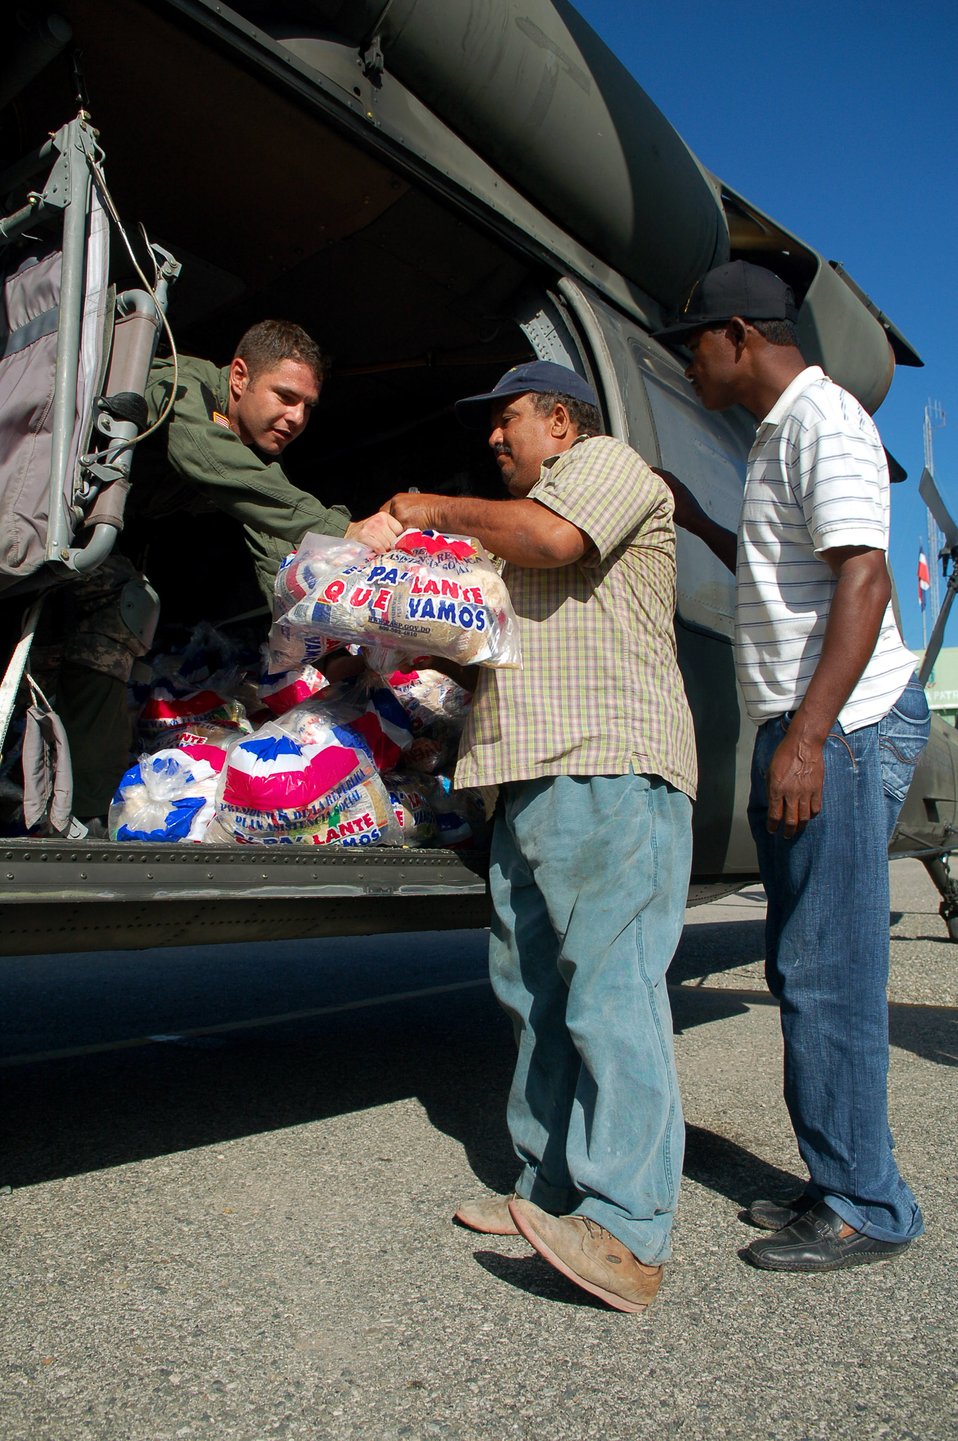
Servicemembers deliver medical relief following storm

Army Spc. James Kaye takes a load of food from a local civilian to deliver to one of three villages in the south-central region of the country Nov. 11 in Azua, Dominican Republic. As of Nov. 12, American and British aircrews had delivered more than 241,000 pounds of provisions to the island nation as part of a combined, joint and international relief effort following Tropical Storm Noel. Specialist Kaye is a UH-60 crew chief with the 1st Battalion-228th Aviation Regiment deployed from Soto Cano Air Base, Honduras.